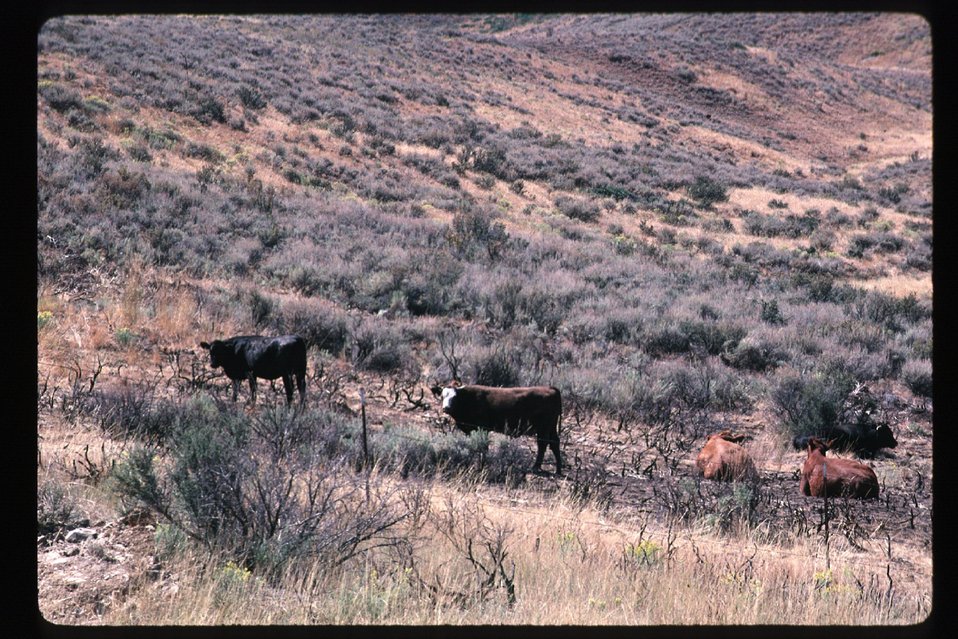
Grazing Cows Rangeland Four Rivers Field Office LSRD Lower Snake River District